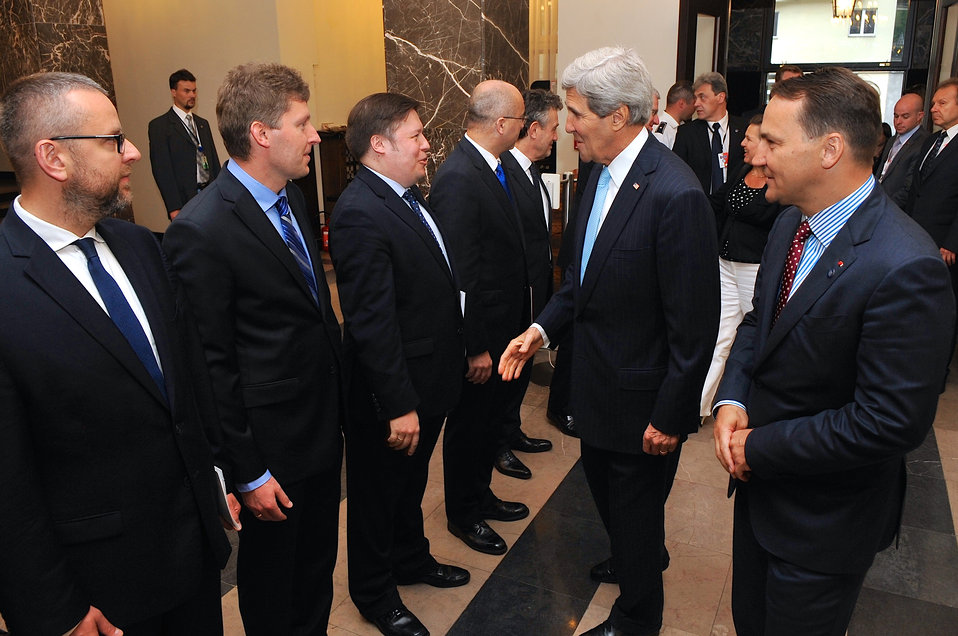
Polish Foreign Minister Sikorski Introduces Secretary Kerry to His Staff in Warsaw

Polish Foreign Minister Radislow Sikorski introduces U.S. Secretary of State John Kerry to his staff upon the Secretary's arrival at the Ministry of Foreign Affairs in Warsaw for a bilateral meeting on the sidelines of President Obama's visit on June 3, 2014.